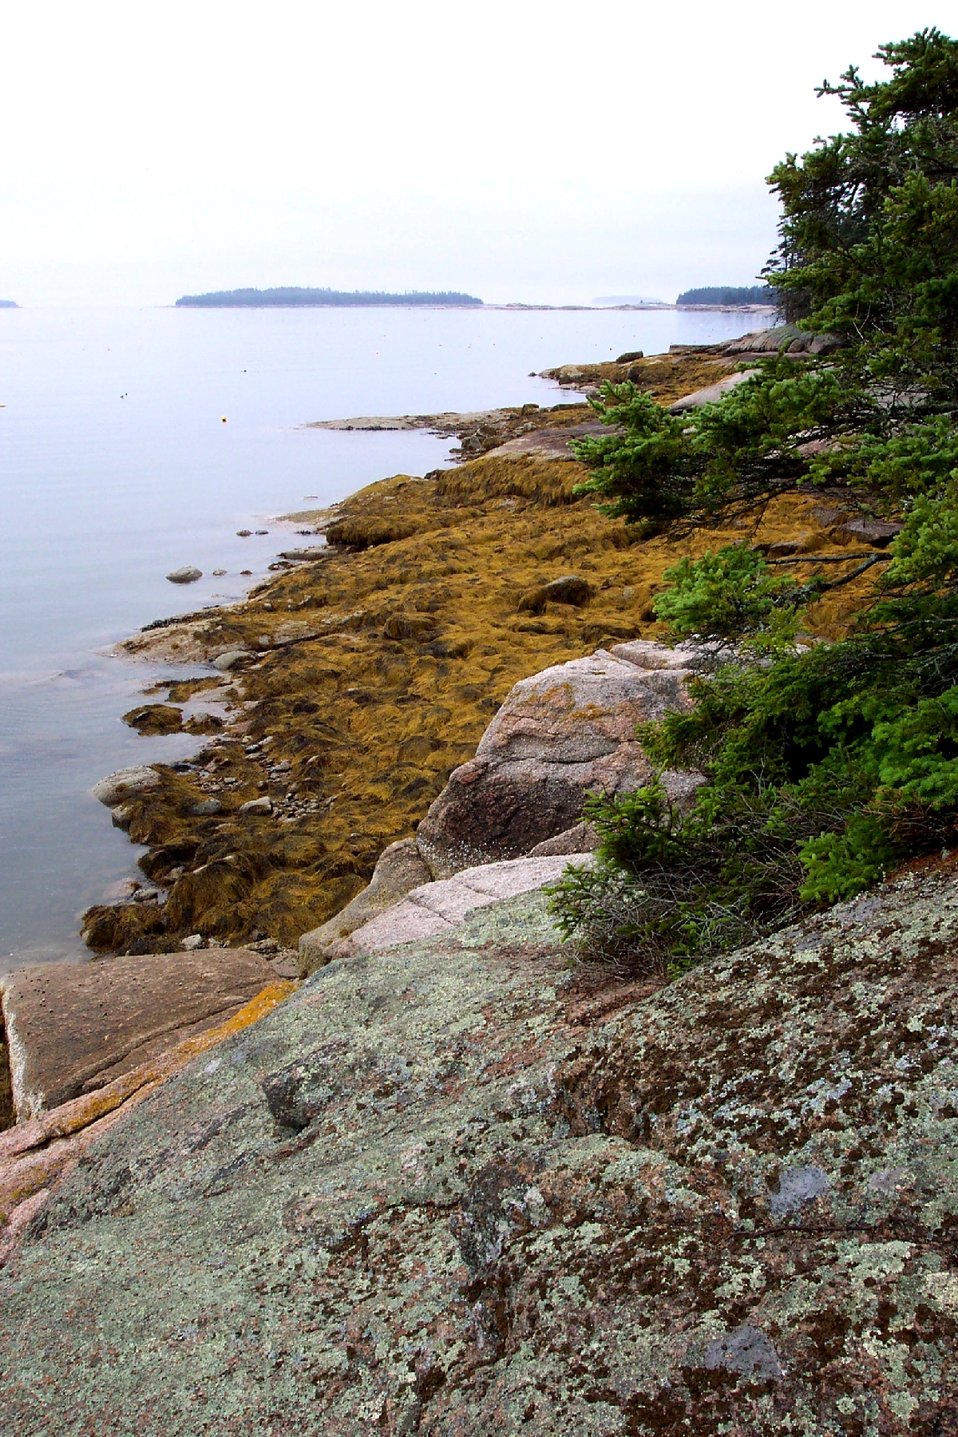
Lichen and conifer covered granite above kelp covered granitic rocks.